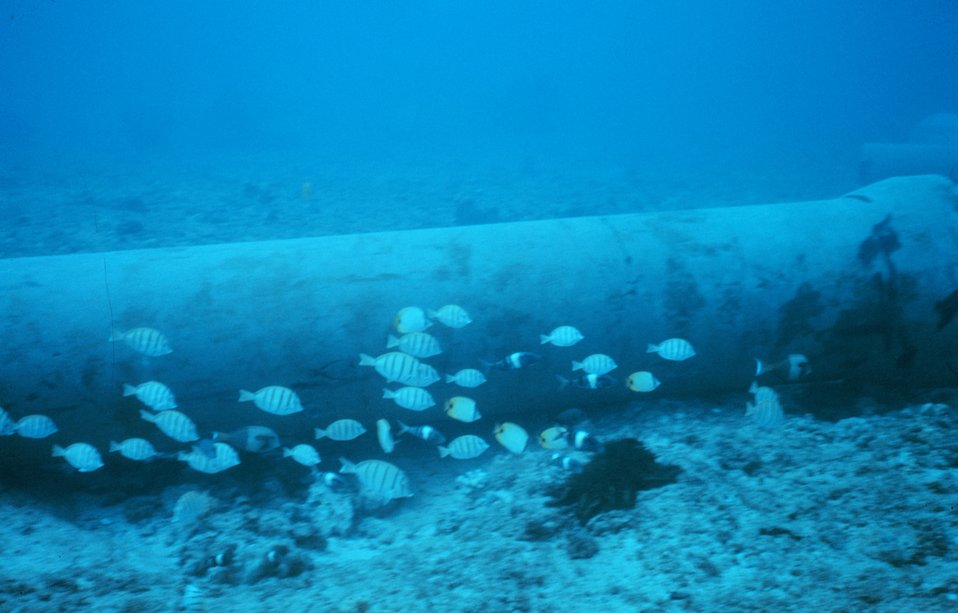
Schooling surgeonfish -Acanthurus sandvicensis (manini or convict tang).